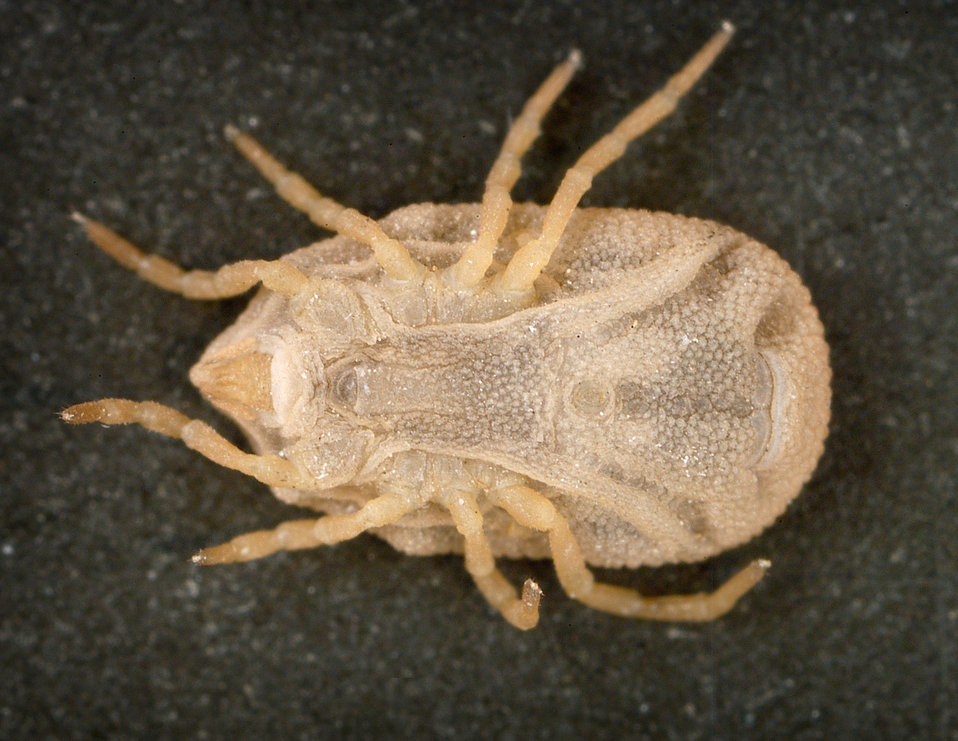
This is a ventral view of the 'soft tick' Carios kelleyi, formerly Ornithodoros kelleyi, or the 'Bat Tick'.